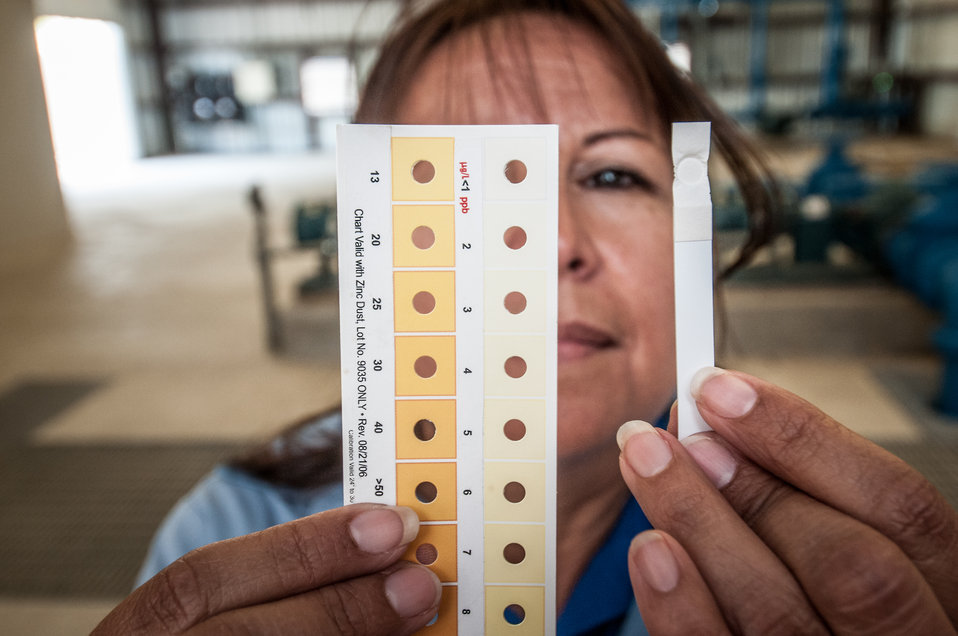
Freer Water Control and Improvement District (FWCID) Manager Diana Adame, right, holds a test strip to a comparison chart to show that the tested water is less than one part per billion of arsenic, on Tuesday June 18, 2013, in Freer, Texas.

Freer Water Control and Improvement District (FWCID) benefits from the financial assistance of the U.S. Department of Agriculture (USDA) Rural Development (RD) to complete a two-phase approach to meeting the city’s water supply and safety needs, on Tuesday, June 18, 2013. Although, the naturally occurring arsenic levels have remained constant for more than a century, the Environmental Protection Agency (EPA) safe level standards have established lower levels of arsenic to be safe for human consumption. To meet those levels FWCID approached USDA and was awarded a $986,000 loan for Phase I, to install two new water wells, each rated at 167 gallons per minute (creating a total of eight wells); 13,600 feet of well collection lines; and 15,000 linear feet of well control line to remotely control the well pumps and the 1,000,000 gallon holding tank at the well facility, which supplies water to the new Arsenic Removal System (Phase II). Previously, water was manually controlled by personnel who knew when and how long to manually opened and closed water valves or started well pumps to ensure holding tank levels were within operating levels during peek and slack times of the day. Phase II was a combination of a $1,832,000 loan and a $1,258,750 grant, which provided for the customized arsenic removal system, seen in these photos. The system includes a new 3,530 sp. ft. facility, on a .76-acre site, and houses the operations room, computer and power system, laboratory room, and pump systems. The entire operation can be monitored through a desktop computer interface system. The computer-controlled system ensures raw water is fed to the arsenic removal pump system, which works in sequence to maintain a constant pressure, when needed, to pump water through (blue) arsenic removal absorber vessels, and into ground storage tanks that feeds the residential and commercial needs of the city. Samples of water are periodically tested; and so far the arsenic levels have been below 1 part per billion (PPB), well under the 10 PPB limit.